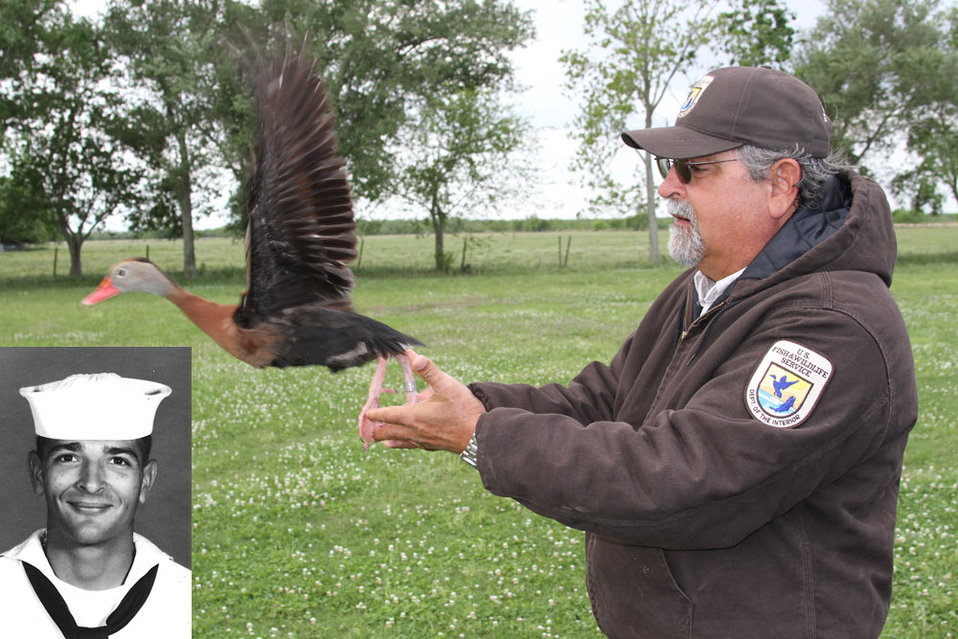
Billy Leonard-Southeast Region

Billy Leonard served in the Navy from February 1967 to February 1970. In that time period I was honored to serve on the USS Hector AR-7 from August 1968 to February 1970. Hector was a repair ship that provided full service repairs to the Seventh Fleet. He was an Electricians Mate and had to opportunity to work in both the electrical rewind shop and as ship’s company electrician.

He began his civilian federal service in 2002 with the US Forest Service, Rocky Mountain Research Station. He conducted research on the effect of forest thinning on wildlife. He began his Fish and Wildlife career as a Wildlife Biologist / Oil and Gas Specialist in March 2005. He insures that the Oil and Gas operations on the refuges of Southwest Louisiana NWR Complex operate in a clean and safe manner. He also works on plugging and abandoning old wells, insuring that the sites are cleaned up and restored back to productive marsh. He says: “I have been fortunate to be able to work with the oil companies to clean up legacy sites on refuge property. However the best part of my job is the wonderful opportunity it gives me to be able to conduct monitoring and inventorying the wildlife populations on the refuges, especially birds.”